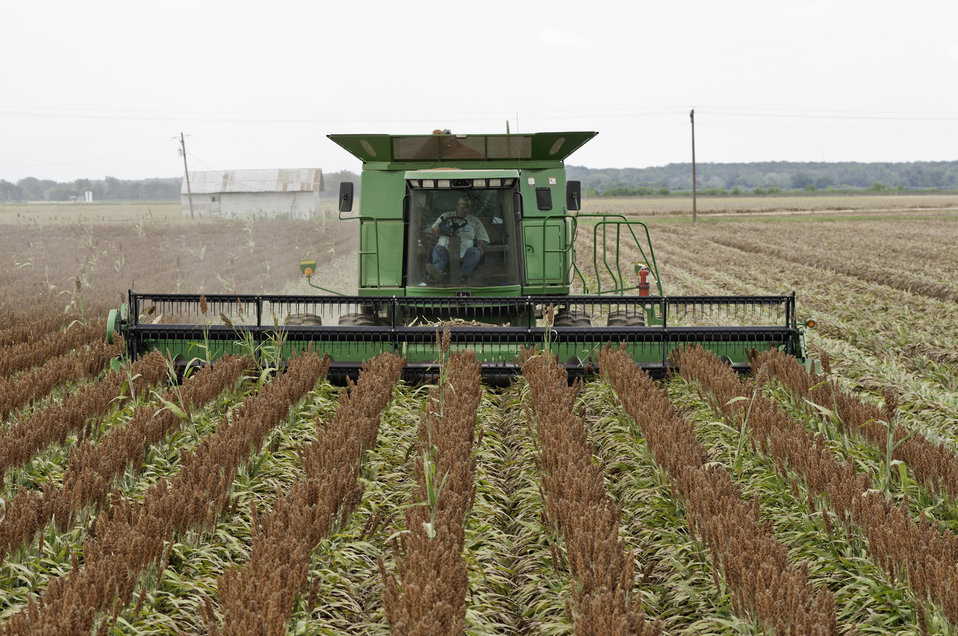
Grain sorghum is harvested on the Wilder Farms in Navasota, TX on Aug. 23, 2013.